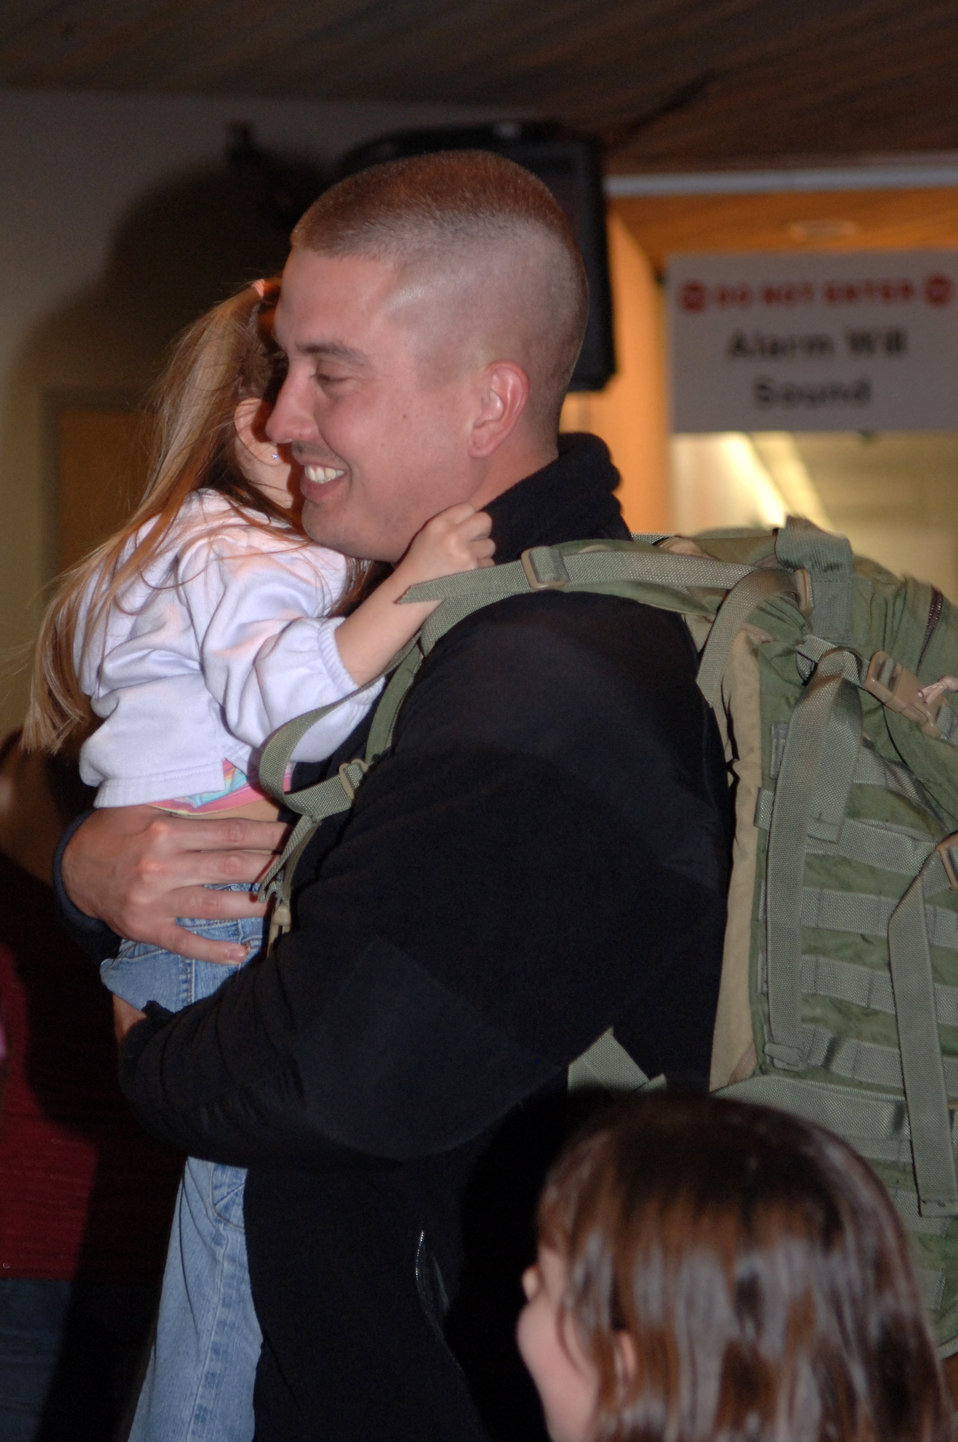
Welcome home to South Dakota

Staff Sgt. Paul Flanagan hugs his daughter, Maghan, upon arriving at Rapid City Regional Airport March 21. Sergeant Flanagan, assigned to the 28th Security Forces Squadron, returned from a deployment to Southwest Asia in support of operations Iraqi Freedom and Enduring Freedom.